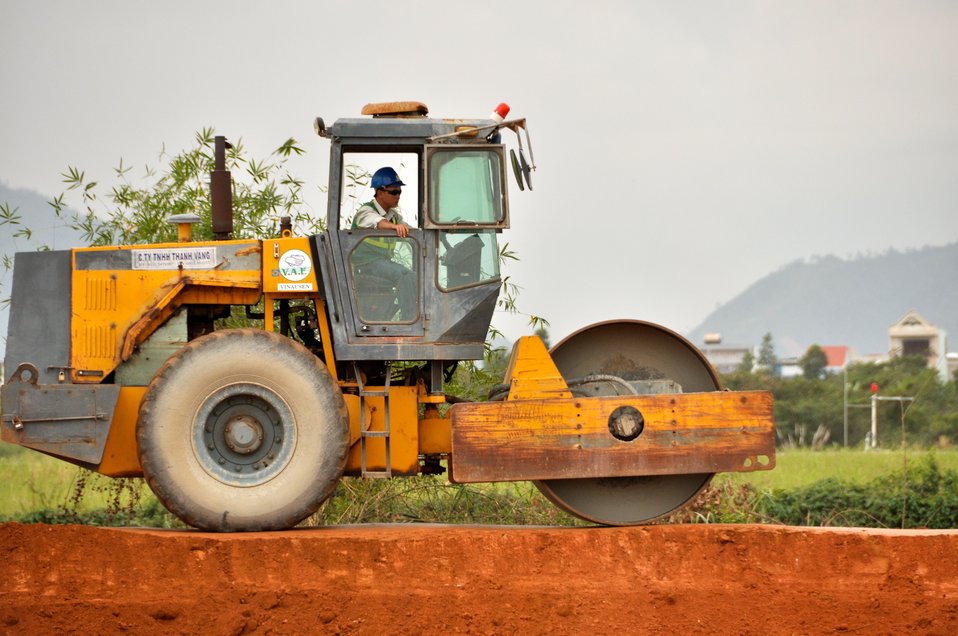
Site Preparation for Environmental Remediation of Dioxin Contamination at Danang Airport

Danang Airport, January 22, 2013